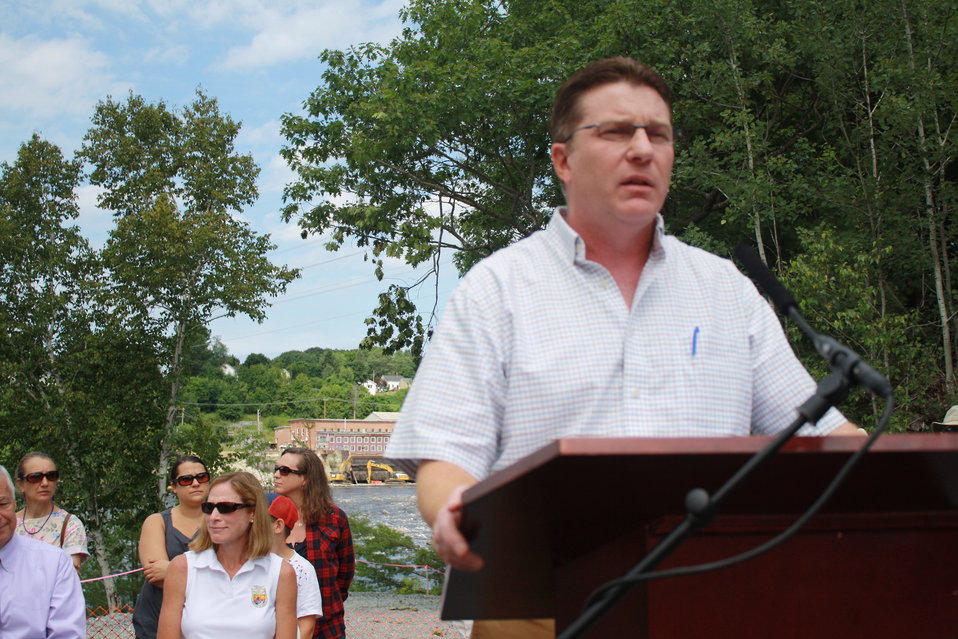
Veazie Dam Removal

Pat Keliher, Commissioner of the Maine Department of Marine Resources. Meagan Racey, USFWS